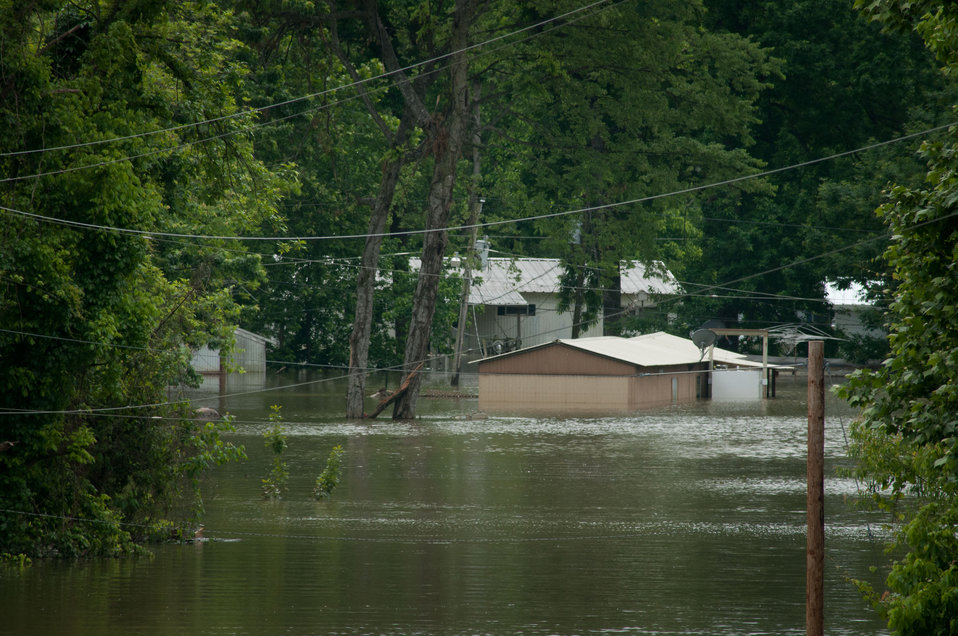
Floods waters from Mississippi River inundated Tunica Cutout, MS on Sunday, May 15. 2011. The entire population was relocated nearby to the protected side of the levee.